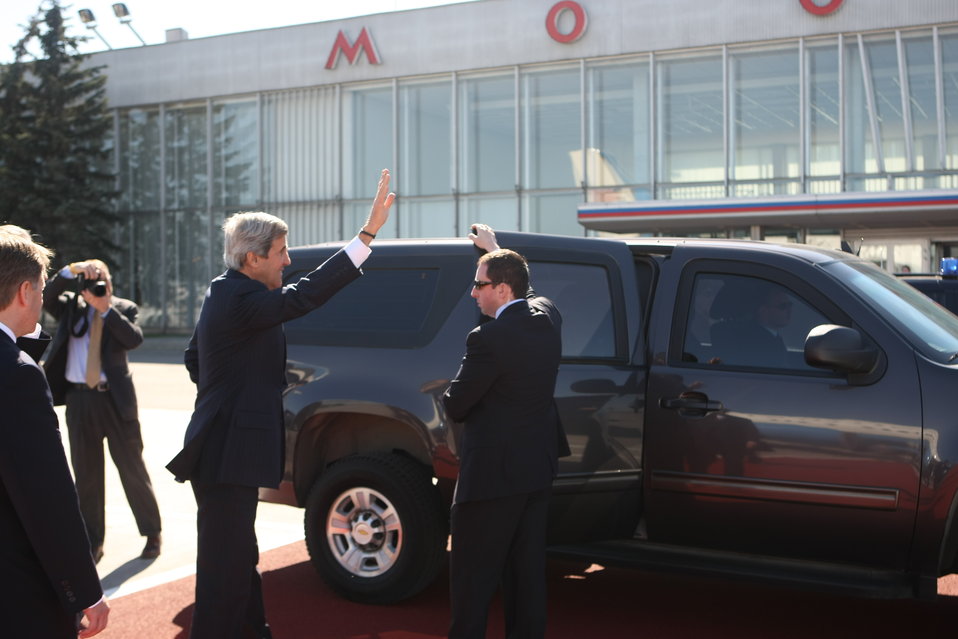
Secretary Kerry Heads to His Meetings With Russian Officials

After arriving at Moscow Vnukovo International Airport, U.S. Secretary John Kerry heads to his meetings with Russian leaders in Moscow, Russia, on May 7, 2013.